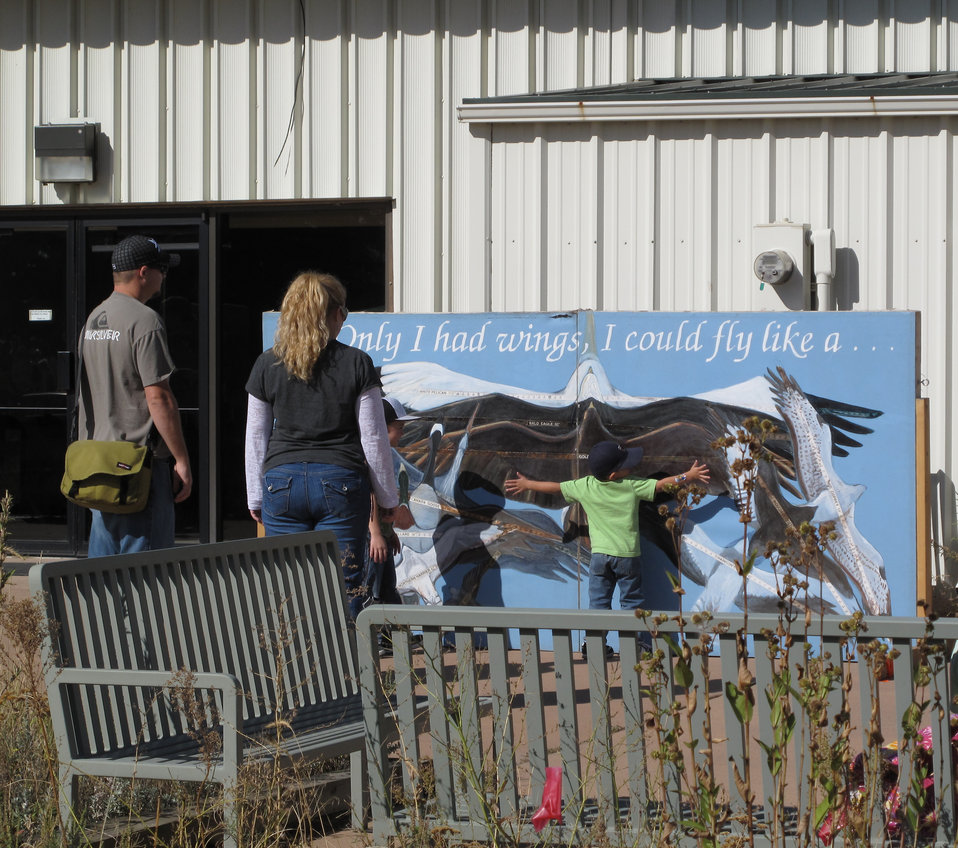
Refuge Round-up 2010

What kind of bird would you be?!